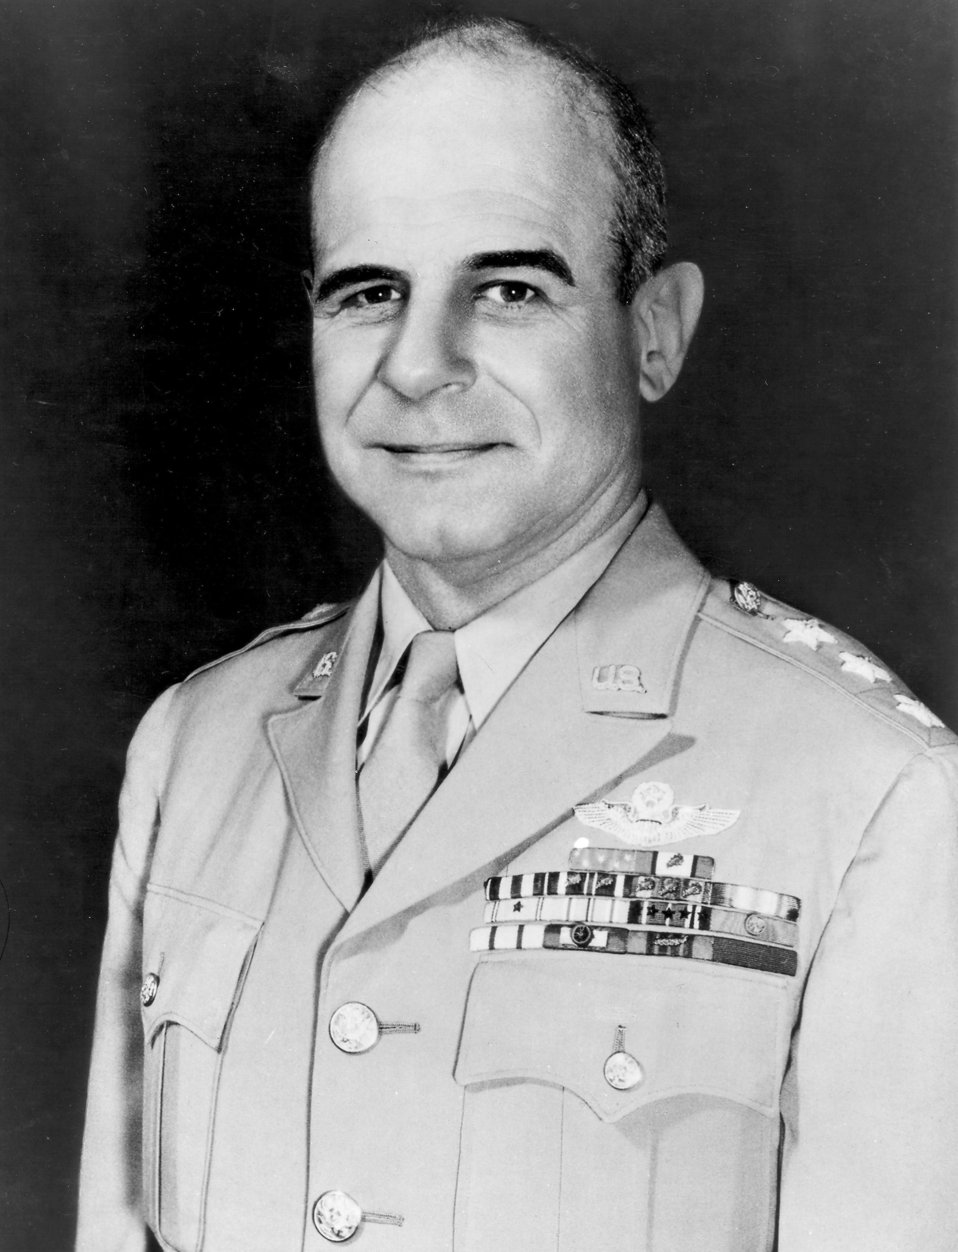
General Doolittle

Lt. Gen. James H.